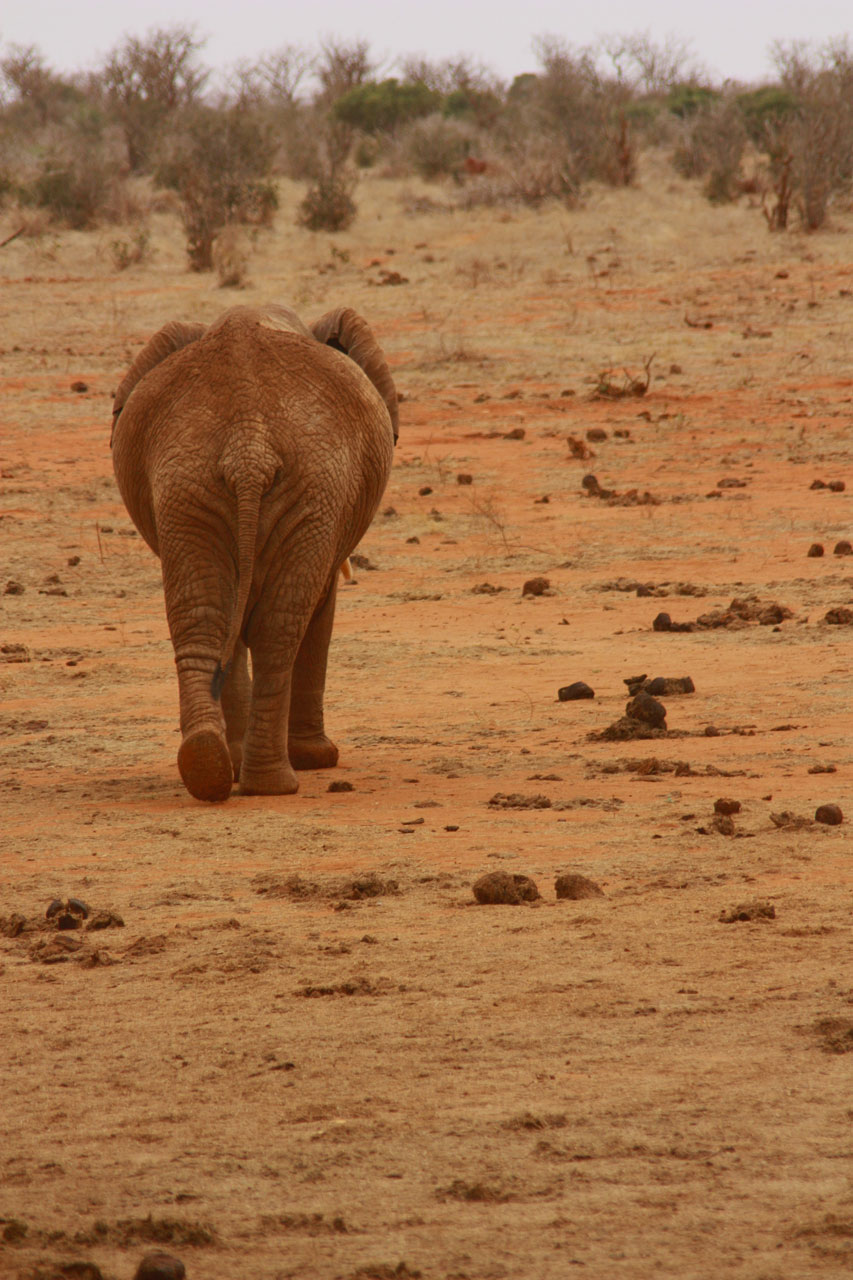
Elephant in tsavo.